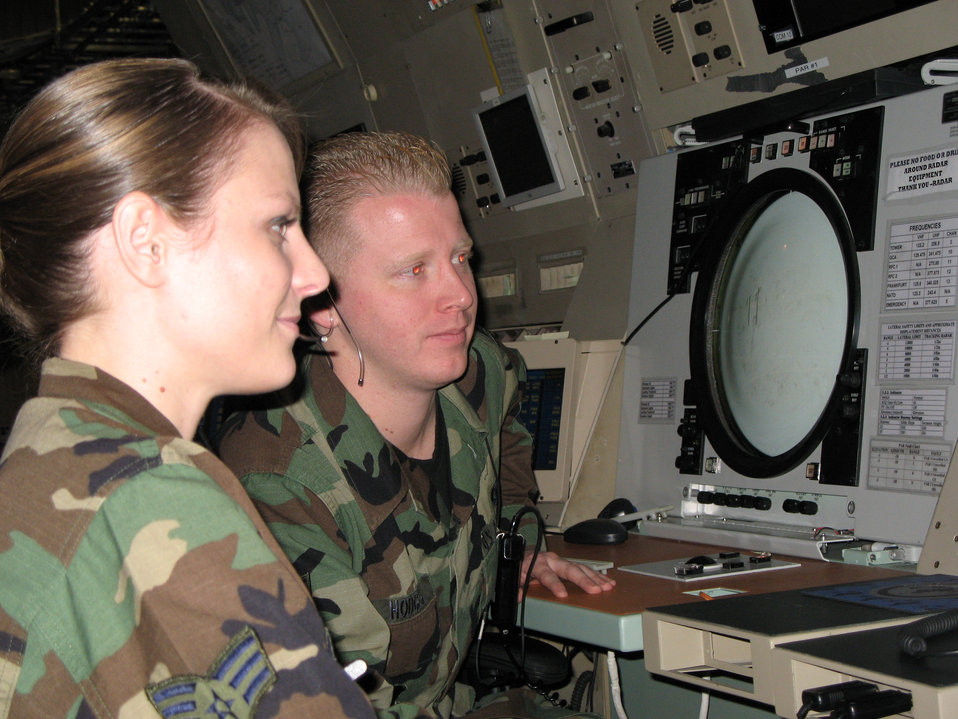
Serving through the season: Senior Airman Matt Hodges

Senior Airmen Andrea Haro and Matt Hodges are assigned to the 52nd Operation Support Squadron at Spanghdahlem Air Base, Germany. Airman Hodges volunteered to serve through the season on Christmas Day so that his fellow air traffic controllers can enjoy some holiday fun with their families.